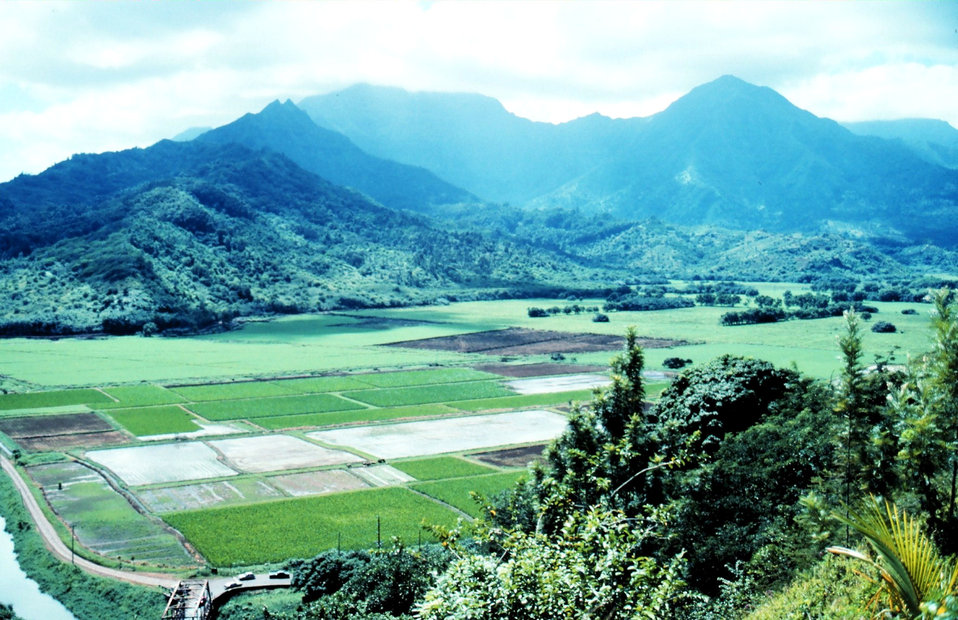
Kauai Poi Plantation in the Hanalei Valley